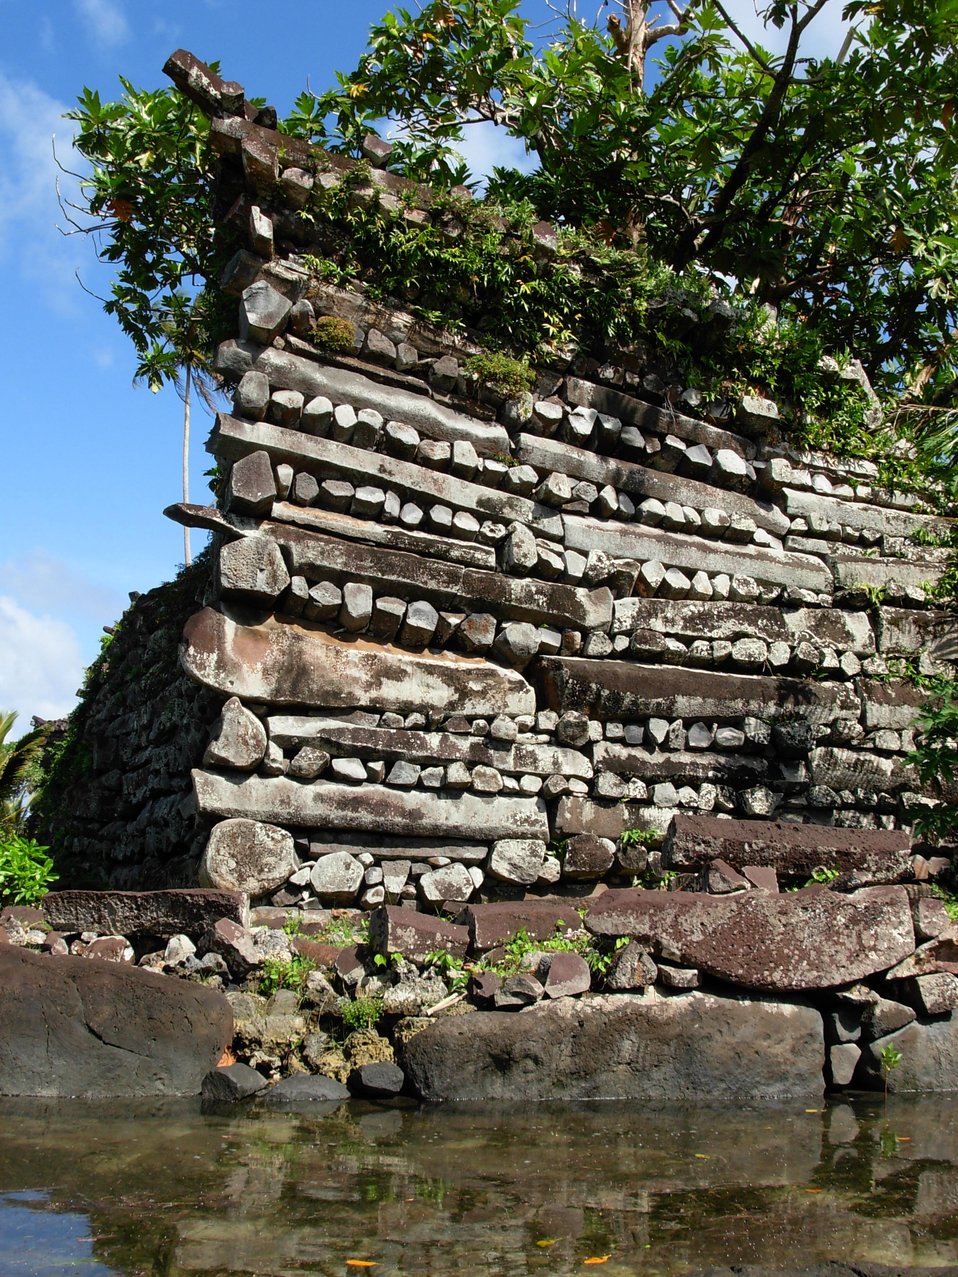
The volcanic 'log' city of Nan Madol.